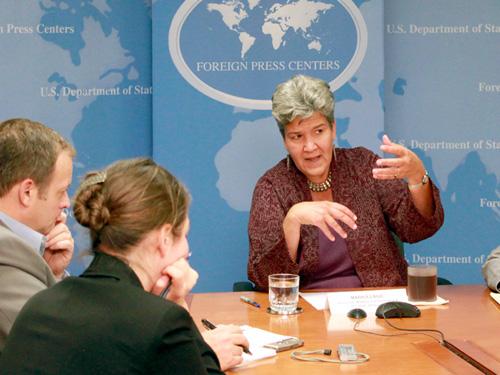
Assistant Secretary Marisa Lago, 10/05/2010

Assistant Secretary Marisa Lago met with foreign journalists today to discuss the increased demand for assistance from the Global Agriculture and Food Security Program and the United States' call for international partners to follow through on our collective commitment to addressing global hunger.